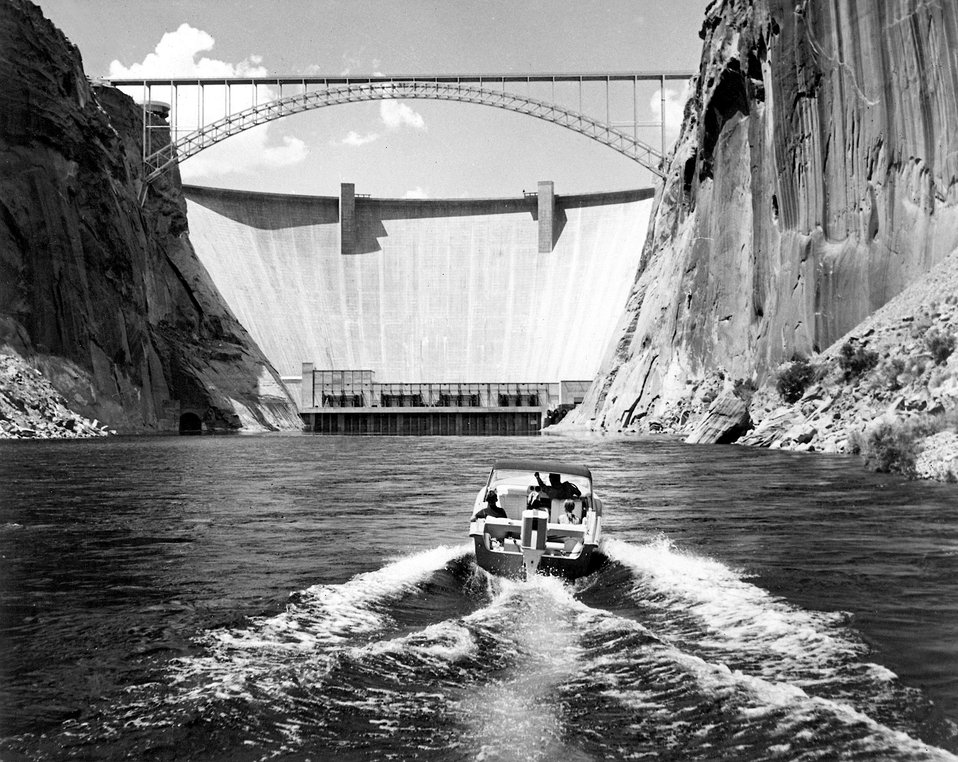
The waters below Glen Canyon Dam may be reached by boaters putting in at Lees Ferry, 15 river miles below the Dam. c. 1980